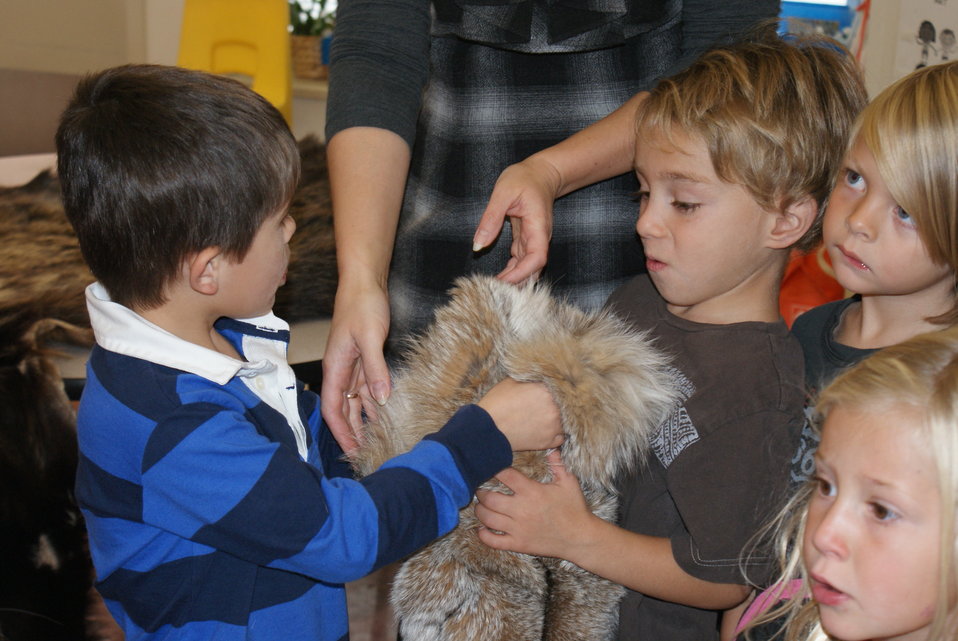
Scientists in the Community Program

U.S. Fish and Wildlife Service Mountain-Prairie Region Deputy ARD for External Affairs, Matt Kales, introduces early childhood education students at William Roberts Elementary School in Denver to some of Colorado's native and historic wildlife species.